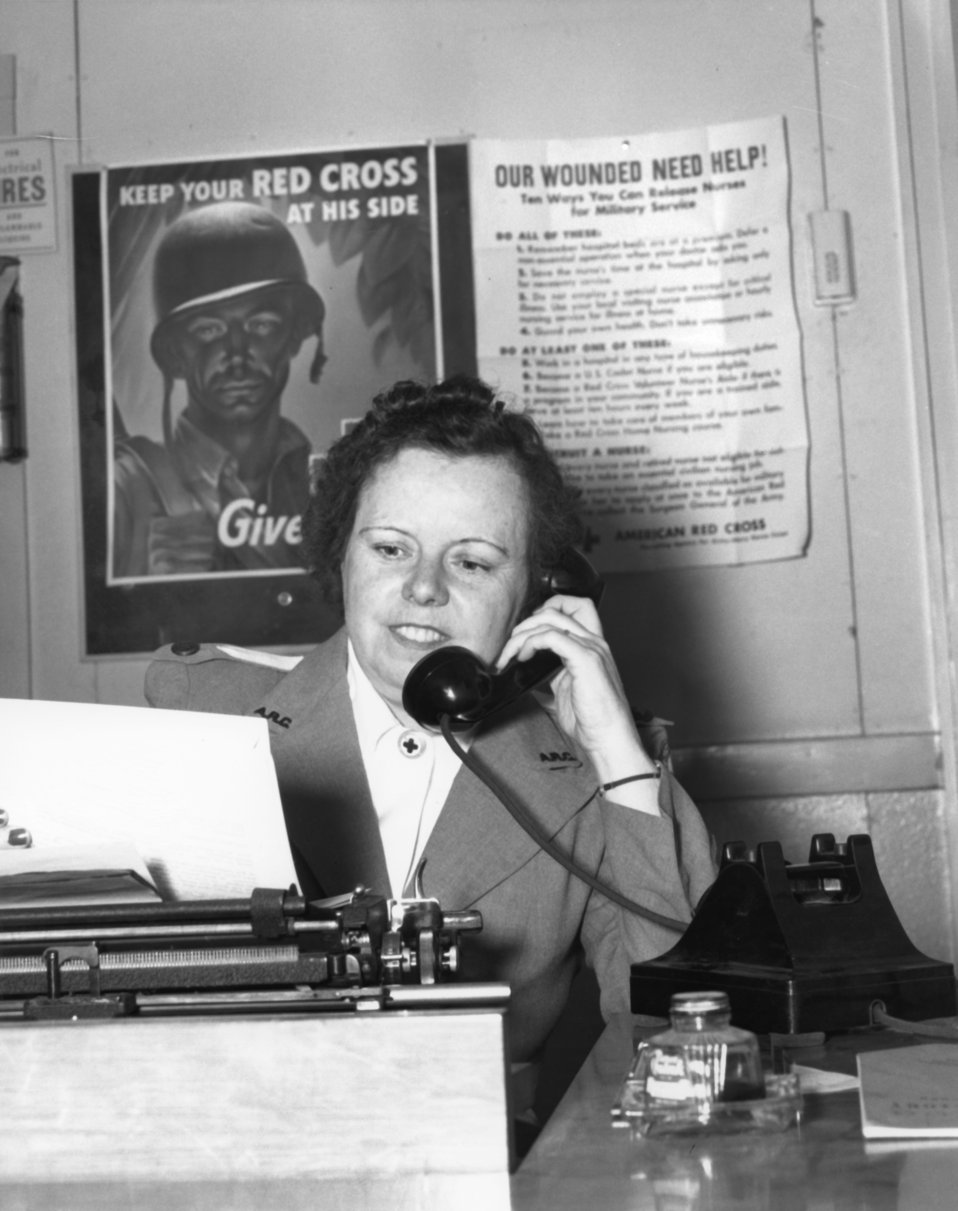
Red Cross Representative Mrs. Wm. Miller 1945 Oak Ridge

pro-351-1 DOE photo Ed Westcott 3-9-1945 Oak Ridge Tennessee